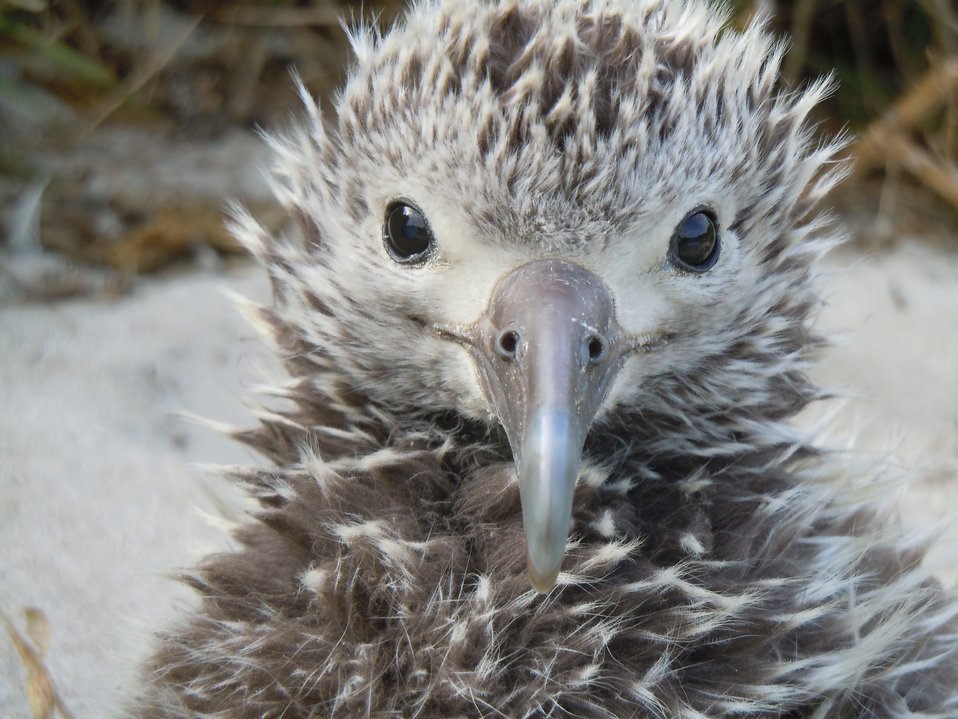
albatross chick

Midway Atoll National Wildlife Refuge
March 2012